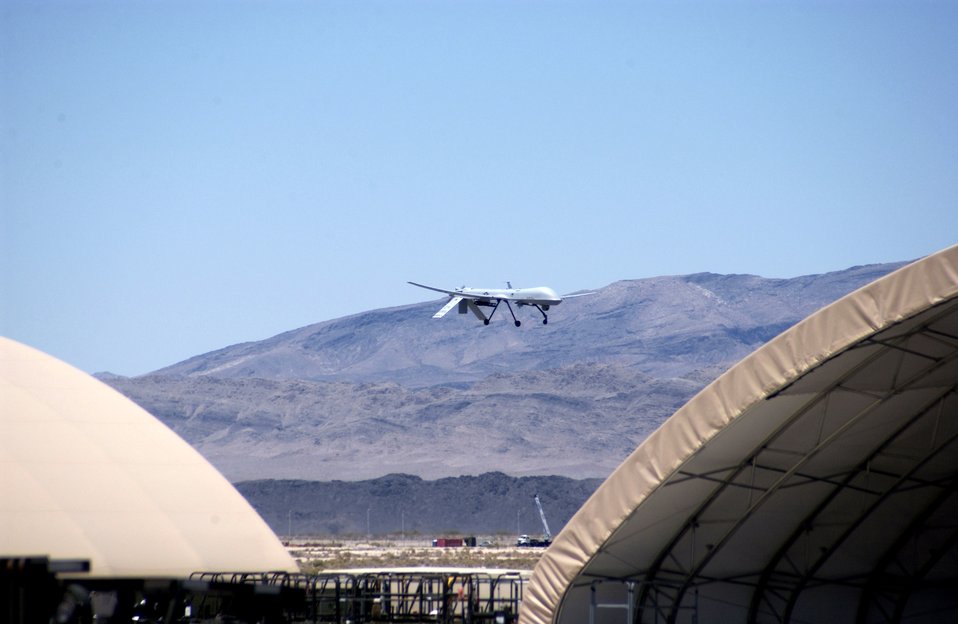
Predators reach quarter-million flight hours

An MQ-1 Predator conducts a low pass commemorating the 250,000th flight hour of the airframe June 22 at Creech Air Force Base, Nev. The Predator is assigned to the 11th Reconnaissance Squadron at Creech AFB. When the Predator is not actively pursuing its primary mission, it acts as the joint forces air component commander-owned theater asset for reconnaissance, surveillance and target acquisition in support of the joint forces commander.